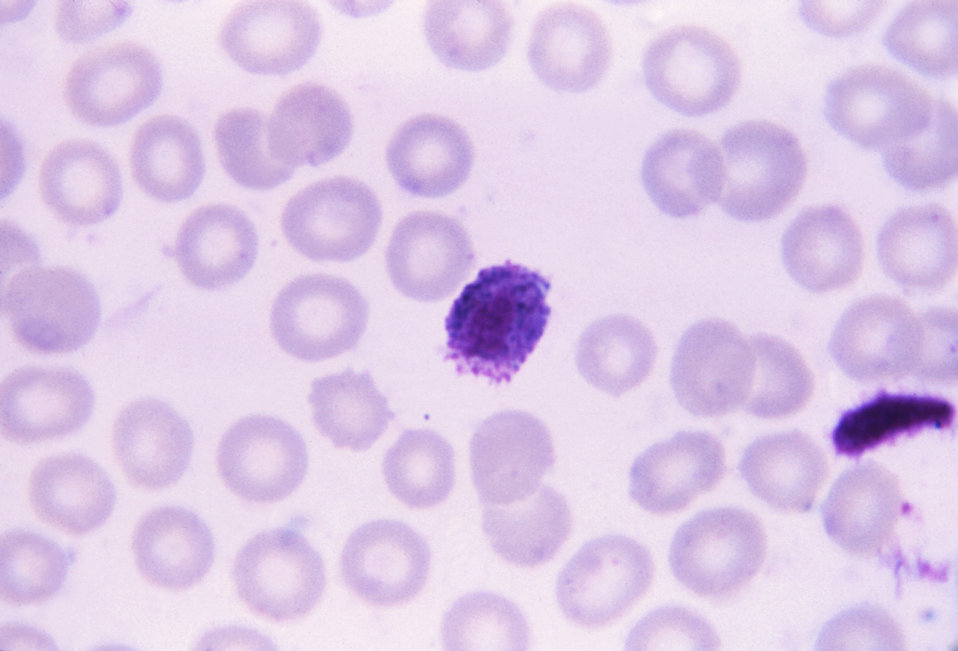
This thin film Giemsa stained micrograph depicts Plasmodium ovale microgametocyte.